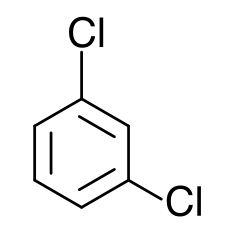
Chemical depiction of 1,3-Dichlorobenzene. Created with BKChem and converted to PNG with Inkscape.